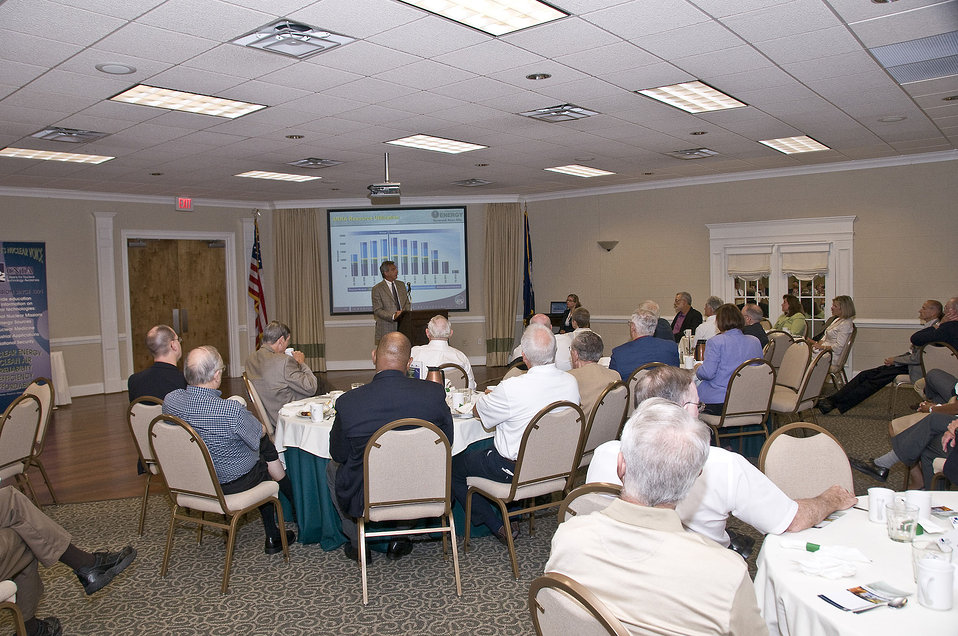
Stakeholder Meeting

(2010) Savannah River Nuclear Solutions (SRNS) President and Chief Executive Officer Garry Flowers, updates about 125 stakeholders and members of the nuclear community on the Recovery Act Program at the Savannah River Site. In his presentation to Citizens for Nuclear Technology Awareness (CNTA) on June 15 in Aiken, S.C., Flowers shared strategies for SRS' focus on safety, major Recovery Act projects and first-year progress in terms of Recovery Act workforce investment and completed projects. Flowers explained major Recovery Act projects, including shipping more than 800 cubic meters of transuranic waste to the Waste Isolation Pilot Plant in Carlsbad, N.M., reducing the height of the 293-F Stack, characterizing 24 waste units, remediating 11 release sites, using in-situ decommissioning on three reactors, and the May 25 implosion of K Cooling Tower, the second-largest cooling tower to be demolished worldwide.